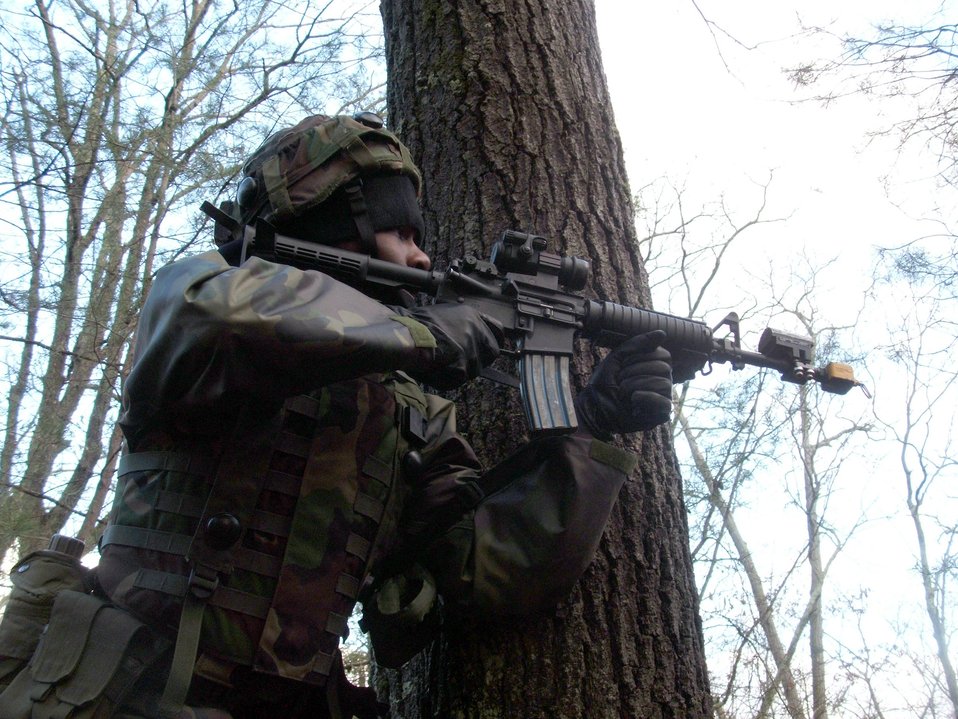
Contingency skills course

FORT DIX, N.J. (AFPN) -- Airman 1st Class Tarish Peterson takes up a position next to a tree while engaging